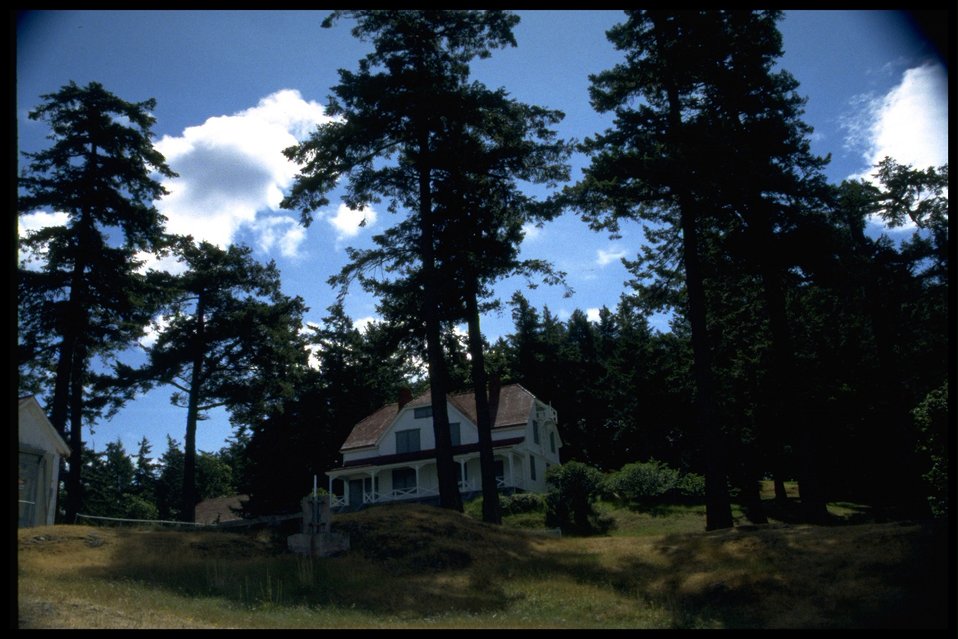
Living quarters at Turn Point. One in a series of ten shots of the living quarters.